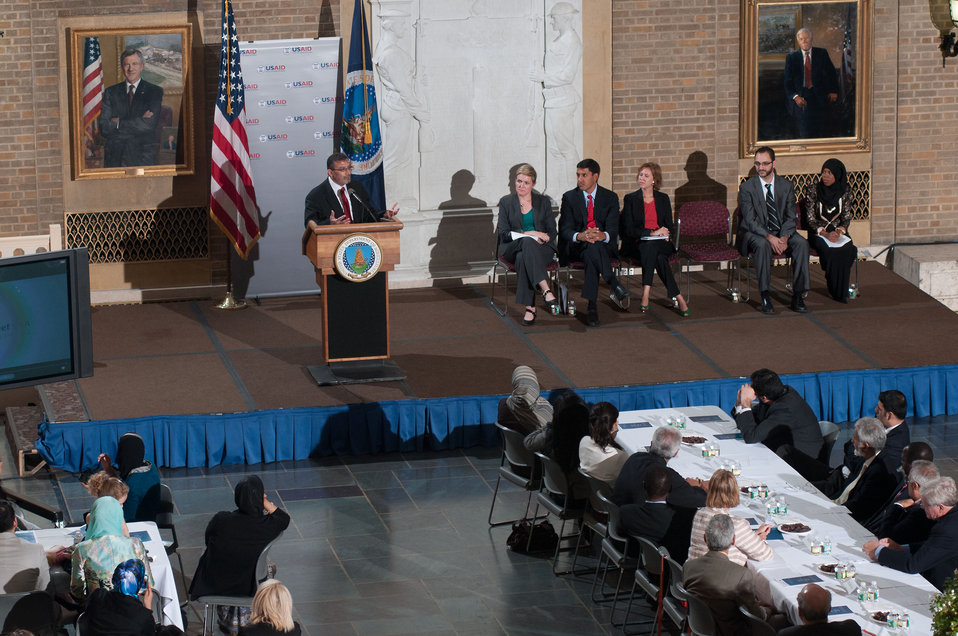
Islamic Relief USA CEO Abed Ayoub presents the reflection during the Iftar event, co-sponsored by the Iftar celebration, co-sponsored by the U.S. Department of Agriculture, U.S. Agency for International Development (USAID) and Islamic Relief USA, on Tuesday, August 7, 2012, in the USDA Whitten Building, in Washington, D.C. Ramadan is the month of fasting, intensive prayer, sacrifice and worship for Muslims around the world. Throughout this month, Muslims fast during the day, abstaining from consuming food from dawn to dusk and using this time to purify spiritually. Fasting reminds Muslims of the poverty and hunger suffered by many in the United States and worldwide. It is a connection with those who are hungry not through devotion, but through the many global factors that lead to hunger and famine. Iftar is the meal at which Muslims break their fast at sunset, usually by eating dates, according to the Prophetic tradition.